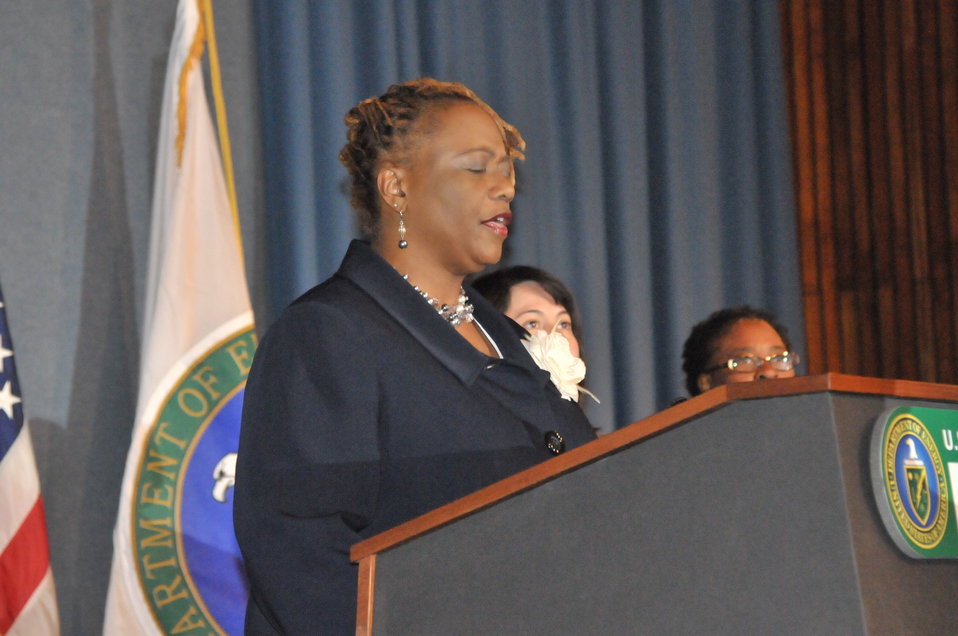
DEPARTMENT OF ENERGY -MARTIN LUTHER KING / BLACK HISTORY MONTH COMMEMORATIVE PROGRAM WITH DOE SECRETARY E. MONIZ IN ATTENDANCE